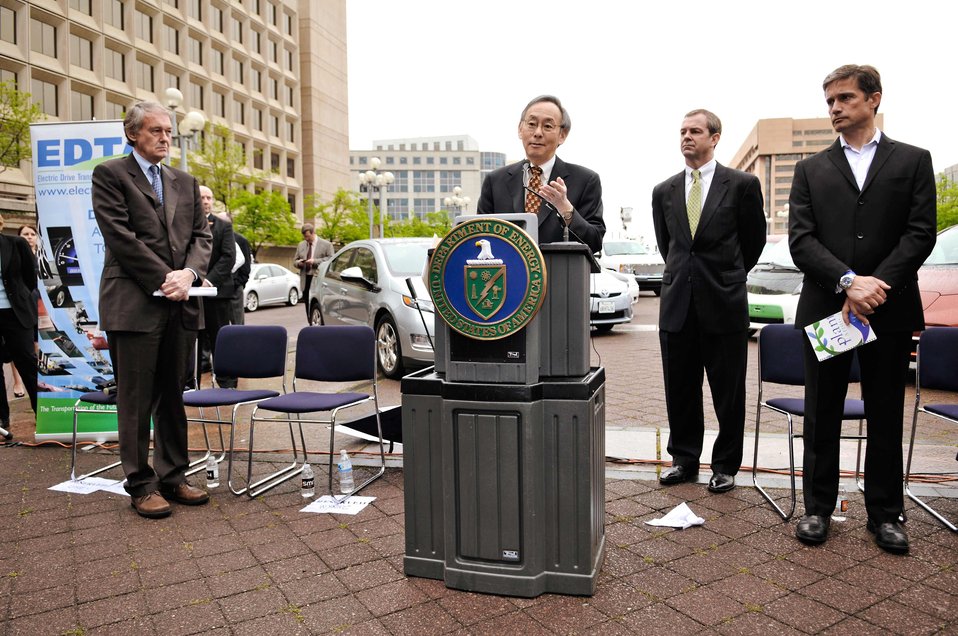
Electric Vehicles on Parade 4 of 5

US Secretary of Energy, Steven Chu, speaks an event for the Electronic Drive Transportation Association. From left to right, US Rep (D-MA) Edward Markey, Secretary Steven Chu, Electric Drive Transportation Association President Brian Wynne and Fabien Cousteau.